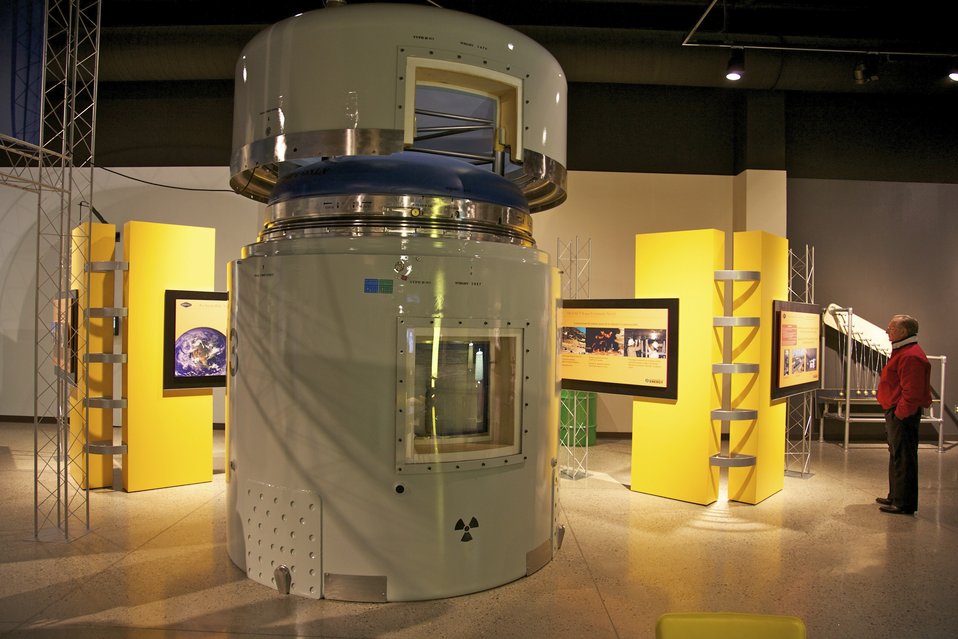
WIPP Transportation Exhibit

A visitor takes a look at the new Waste Isolation Pilot Plant (WIPP) transportation exhibit that was unveiled November 5, 2011 in Albuquerque, N.M. at the National Museum of Nuclear Science and History. A cutaway of the TRUPACT-II, a transportation package used for shipping transuranic waste to WIPP near Carlsbad, N.M., is the centerpiece of the new exhibit. The project was an initiative between the museum, the U.S. Department of Energy Carlsbad Field Office and URS Washington TRU Solutions, LLC, the WIPP management and operating contractor.